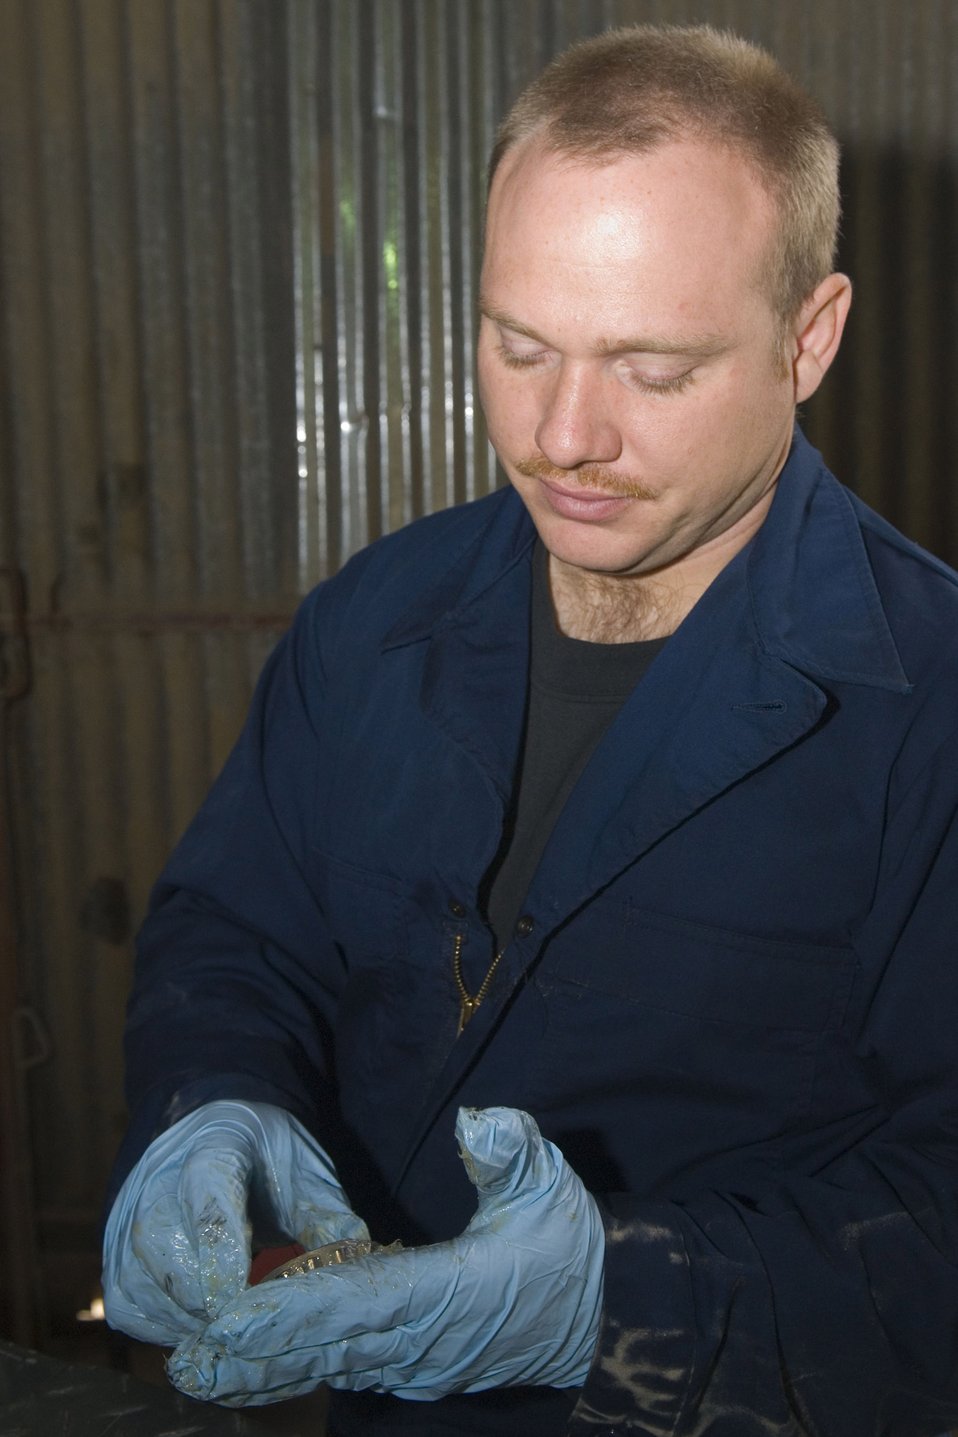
Munitions don't fly without these guys

Staff Sgt. Patrick McManaman applies grease to a ball bearing Dec. 19 at Balad Air Base, Iraq. The bearing is to be placed on a munitions trailer during its 720-day inspection. Sergeant McManaman is a 332nd Expeditionary Maintenance Squadron munitions equipment maintainer and is deployed from Hill Air Force Base, Utah.